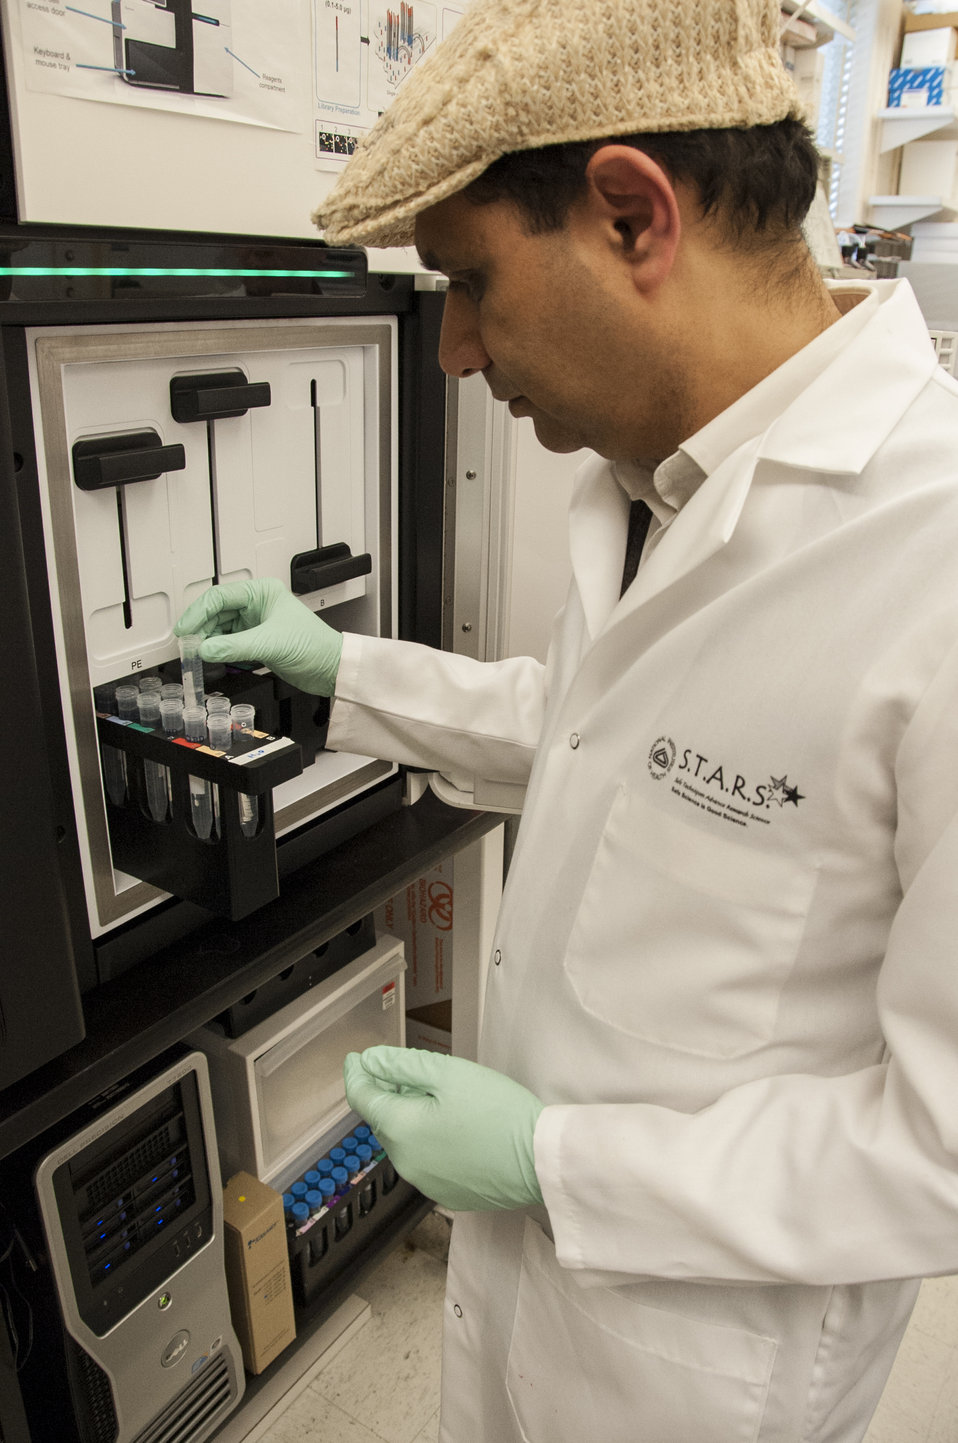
Bio Threats: FDA's A-Team (6328)

Zuben Sauna, Ph.D., (shown) principal investigator in CBER’s hemostasis laboratory, and chemist Wells Wu, Ph.D., are exploring the shapes of proteins used in medical treatments to determine why they prompt a strong reaction from the body’s immune system. Suspecting that the shapes may be part of the problem, the researchers are using tiny pieces of DNA-like molecules called aptamers to probe the proteins. Hemostasis is the process of getting bleeding to stop and the antibodies that cling to these proteins are causing life-threatening complications, particularly in the treatment of bleeding disorders.

Scientists at FDA’s Center for Biologics Evaluation and Research (CBER) work to facilitate the development of safe, effective treatments that would neutralize biological threats to public health and security. CBER regulates preventive and therapeutic vaccines, blood and blood products, human cell and tissue-based products, gene therapies and xenotransplantation. To learn more, read this FDA Consumer Update:

• FDA Teams Prepare for Biological Threats